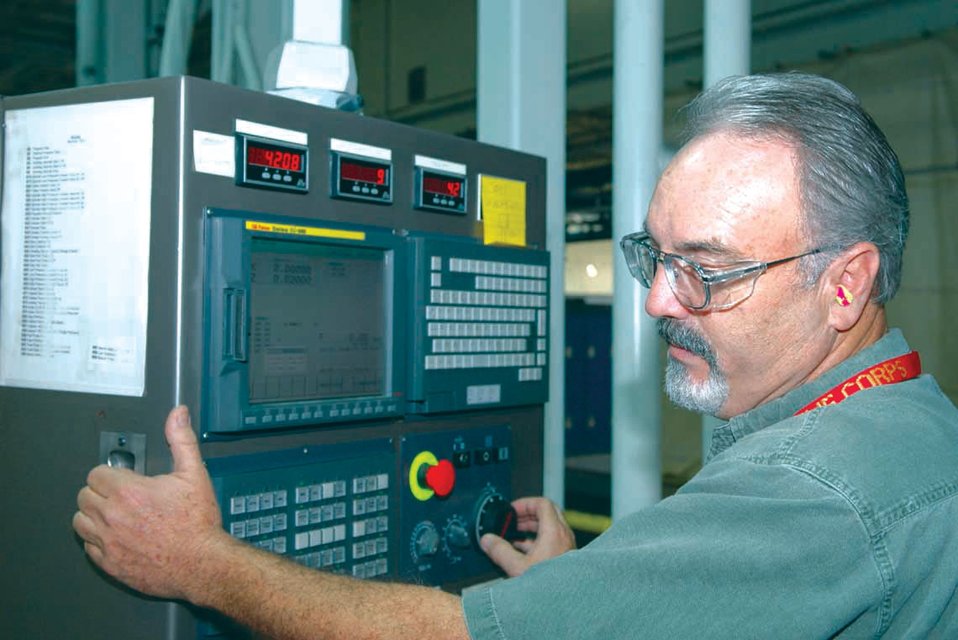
Tinker unit designs new welding process for B-2

John Kelly operates the controls of a Campbell Grinder machine, while monitoring the repair of a part from an F100 engine. Mr. Kelly is a toolmaker with the 547th Propulsion Maintenance Squadron.